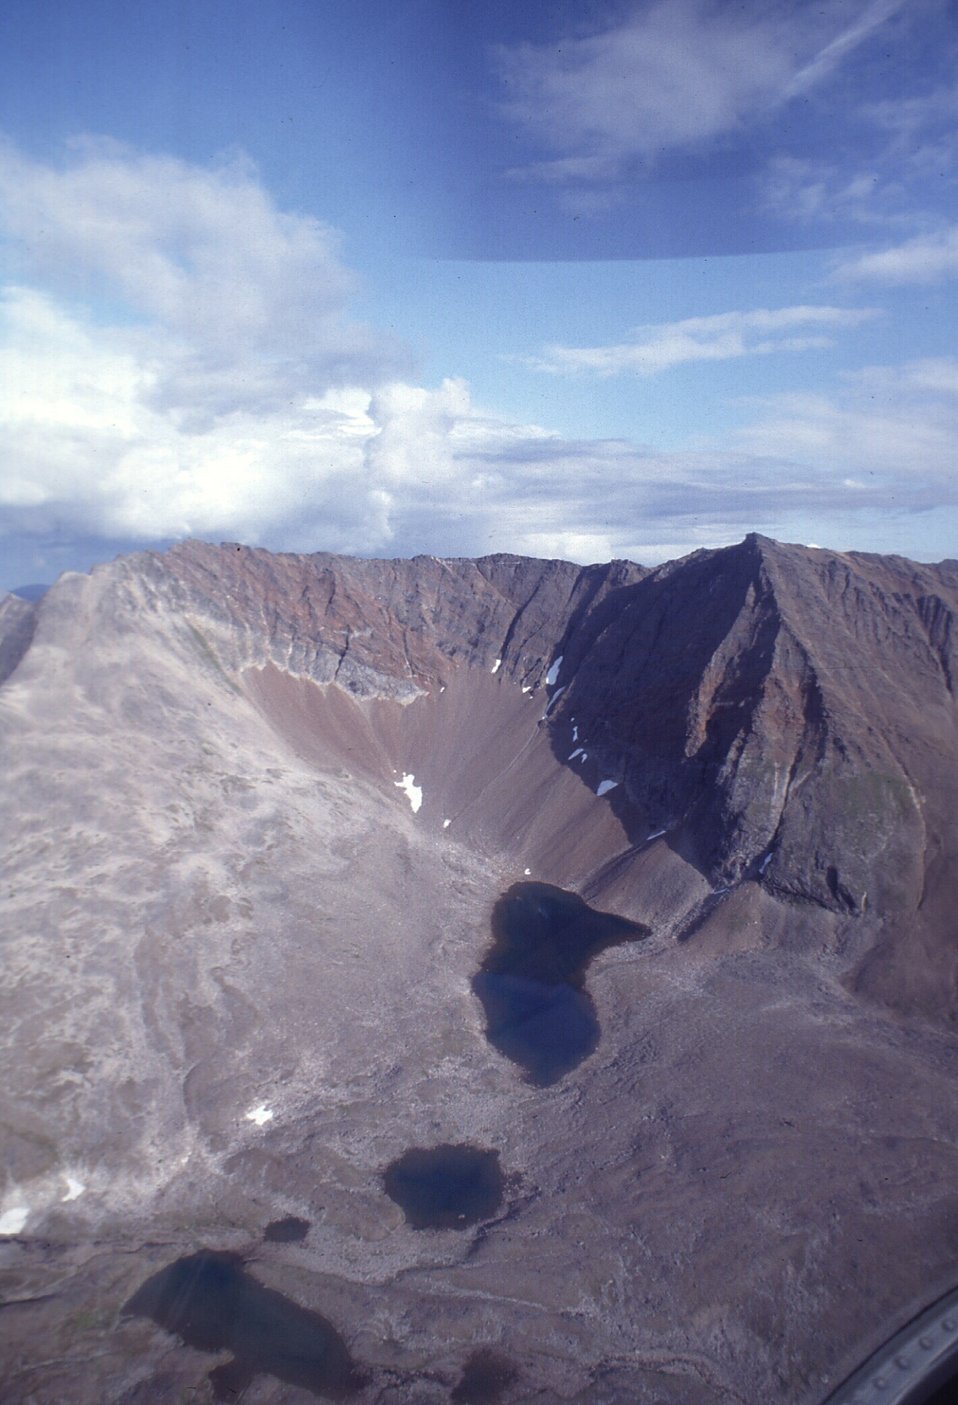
Tarns in Kigluaik Mts., Seward Peninsula